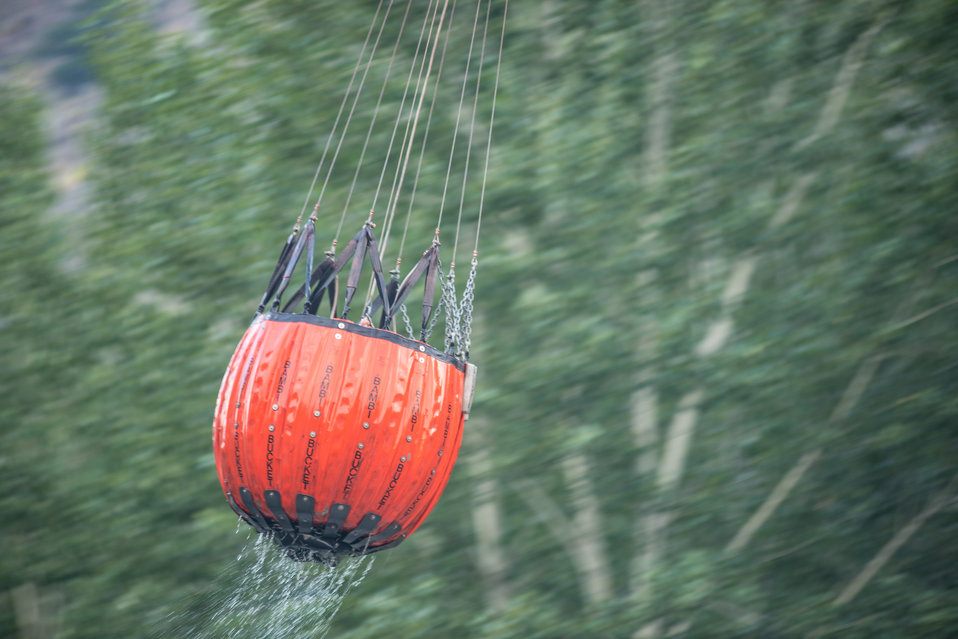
A Bell UH-1H helicopter lifts a full Bambi Bucket, a collapsible bucket utilizing a pilot-controlled release valve, that is able to deliver a concentrated column of water from the helicopter to the fire on the Carbonate Ridge, rising behind the Wood River, during Beaver Creek Fire, west of Hailey, ID, on Monday, Aug 19, 2013.